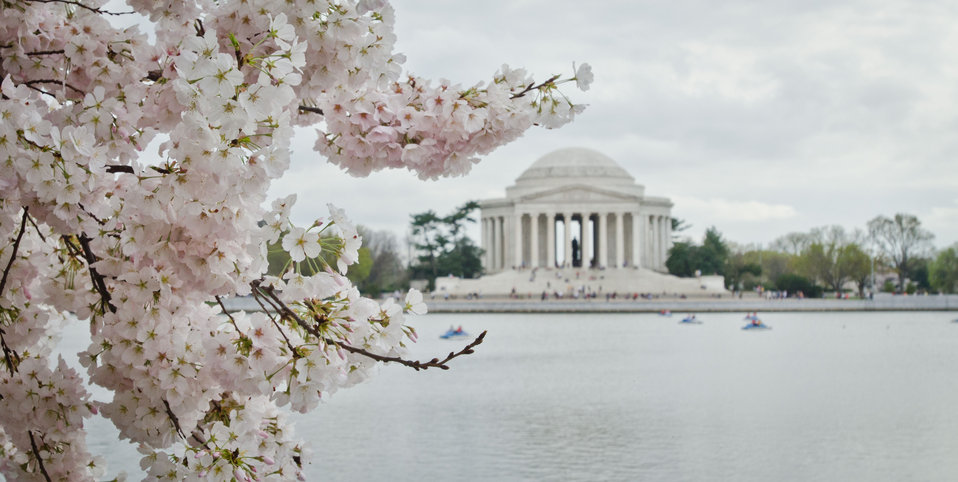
Jefferson Monument surrounded by Cherry blossoms in Washington, D.C., on Tuesday, March 20, 2012.